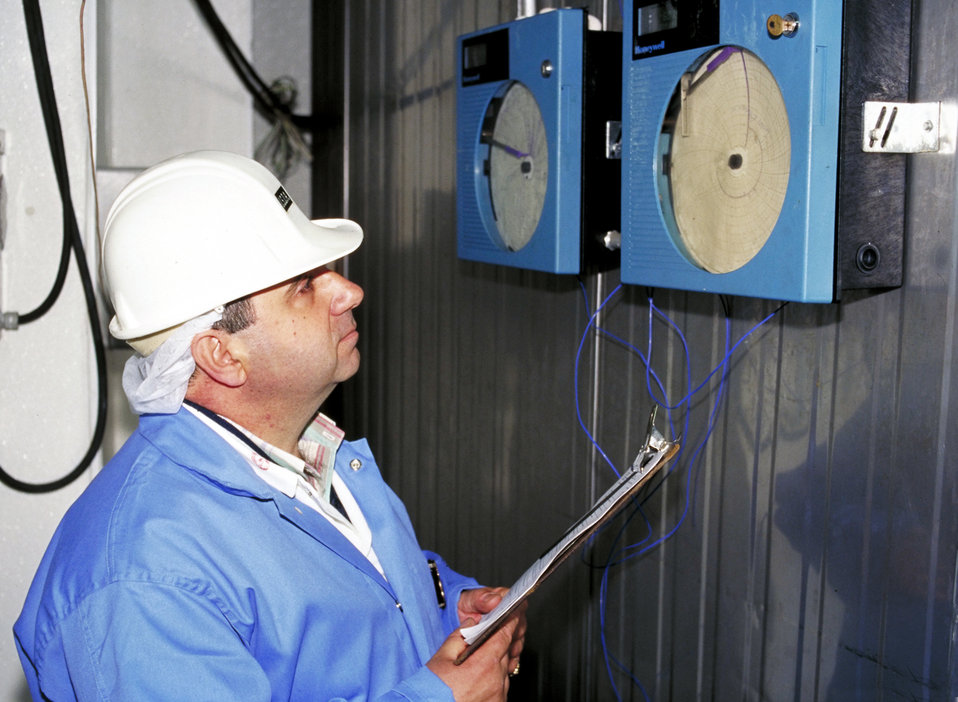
U.S. Department of Agriculture’s (USDA) Food Safety Inspection Service (FSIS) inspector verifies the temperature that is being recorded on the plant recorder is accurate complies with the USDA FSIS Hazard Analysis and Critical Control Points (HACCP) plan at a meat processing plant in Brooklyn, NY on June 15, 1995.